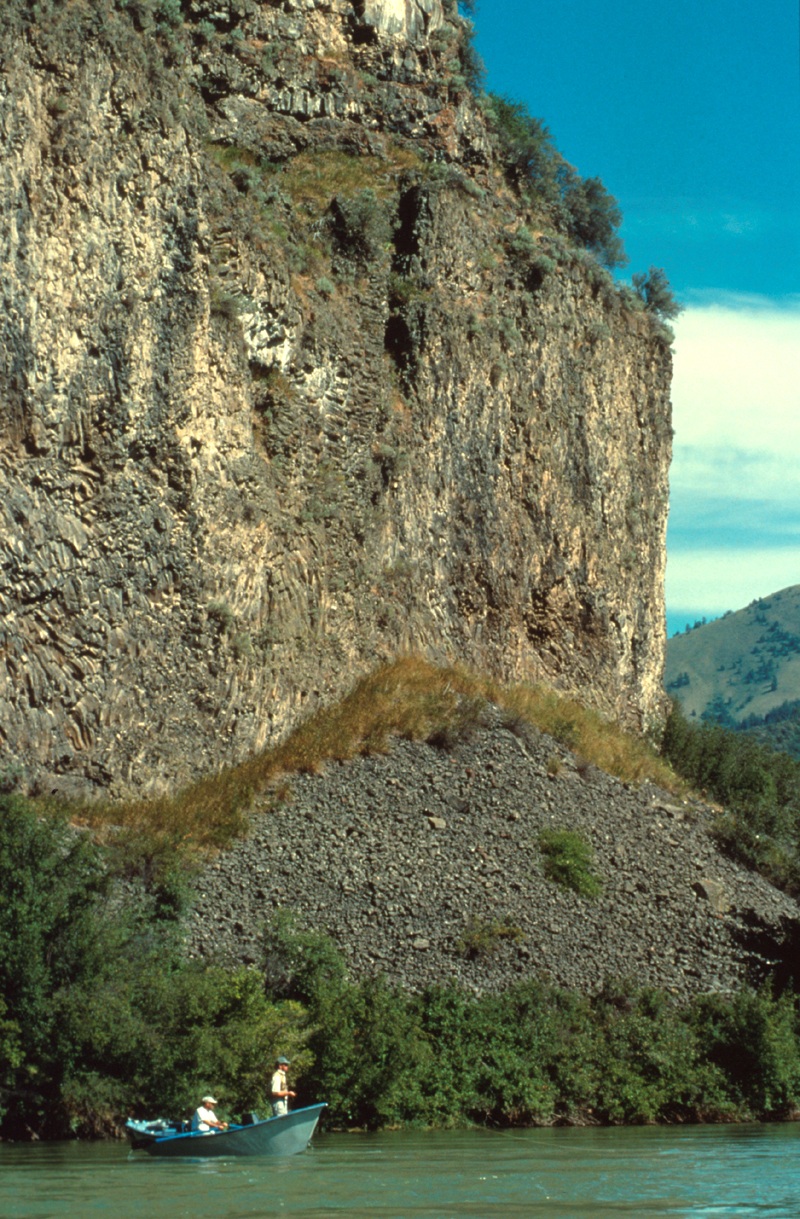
South Fork of the Snake River